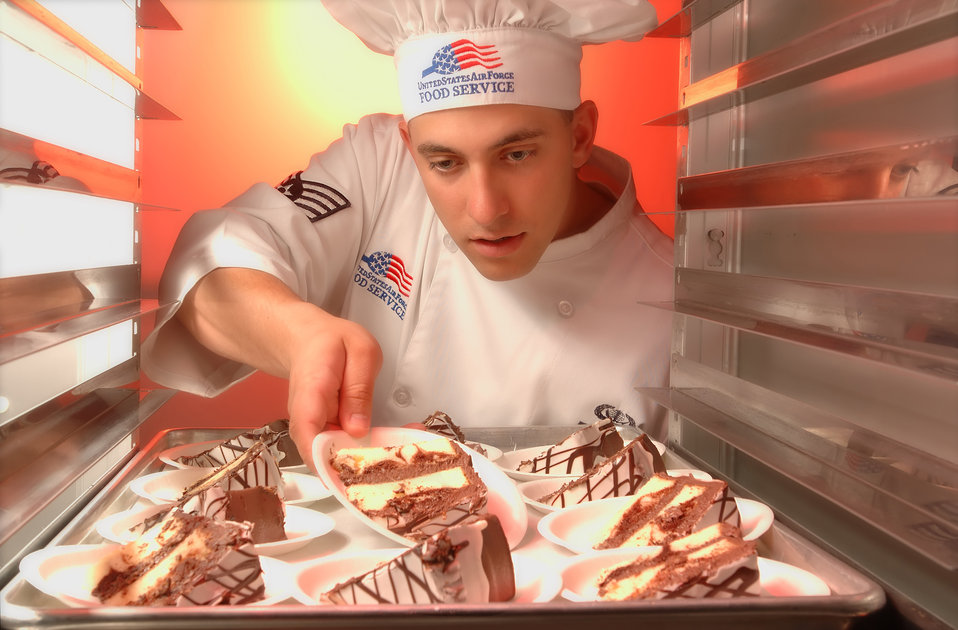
You got served

BURLINGTON, Vt. -- Staff Sgt. Charlie Post places cake in a refridgeration unit at the dining facility here June 27. He is a services technician with the Vermont Air National Guard's 158th Services Squadron.